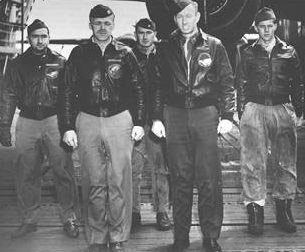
Former Doolittle Raider passes away

Former Lt. Nolan A. Herndon, a member of the famed Doolittle Raiders, died of pneumonia Oct. 8 at the age of 88. The lieutenant was a navigator-bombardier on one of the B-25 bombers that took off from an aircraft carrier on April 18, 1942, to strike targets in Japan. He was a member of Crew No. 8, shown in this historical photo: front row: Capt. Edward J. York, pilot; Lt. Robert G. Emmens, copilot; back row: Lt. Nolan A. Herndon, navigator/bombardier; SSgt. Theodore H. Laban, flight engineer; Sgt. David W. Pohl, gunner.